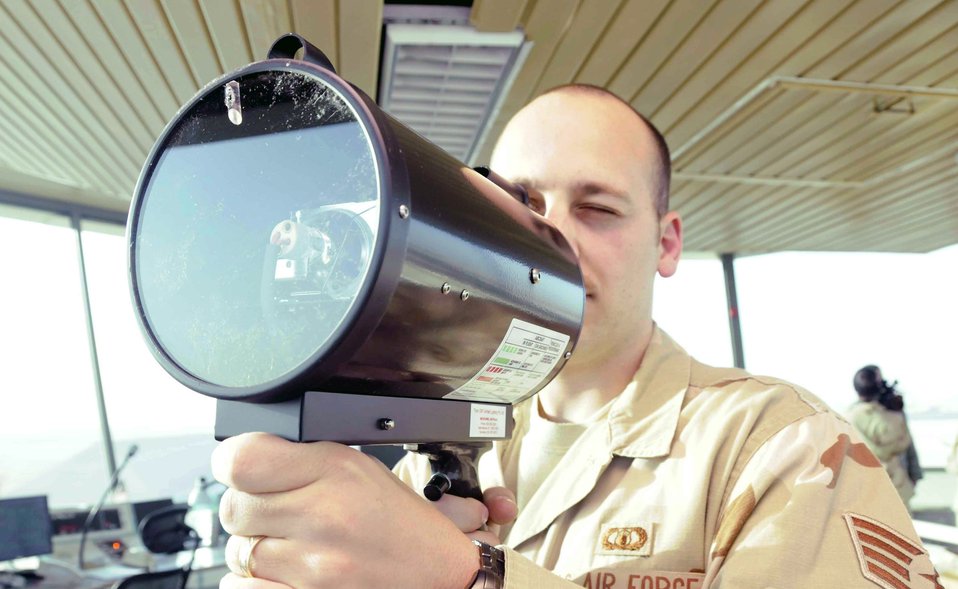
Air traffic controllers keep aircraft soaring

Staff Sgt. Bryce Hamilton demonstrates the use of a light signal to communicate with vehicles that have lost radio contact with the tower April 15 at a Southwest Asian air base. Sergeant Hamilton is assigned to the 379th Expeditionary Operations Support Squadron.